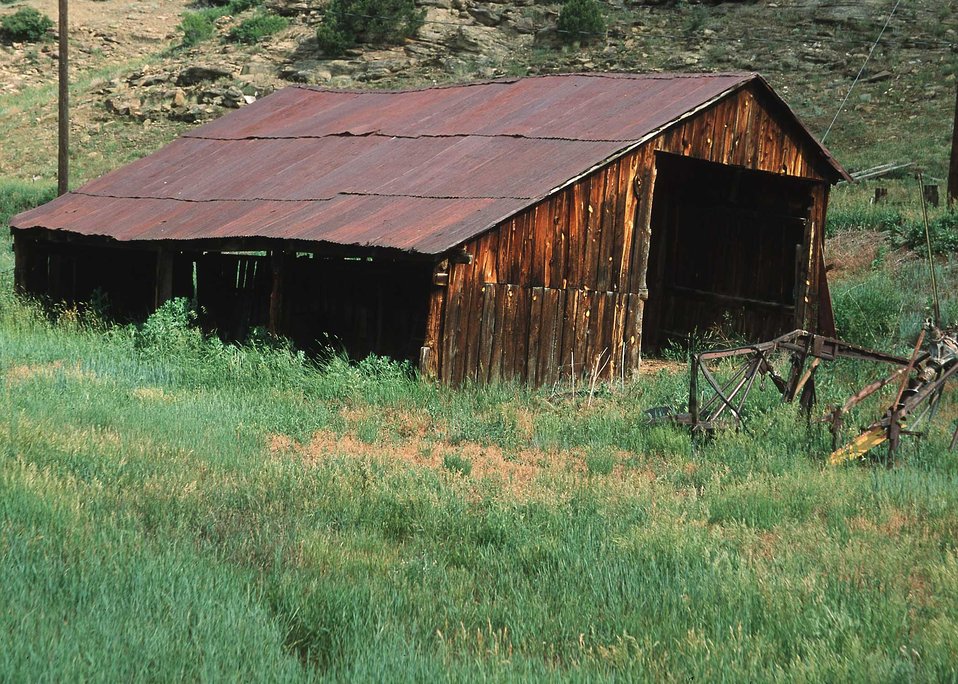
An old barn near Spanish Peaks, CO.